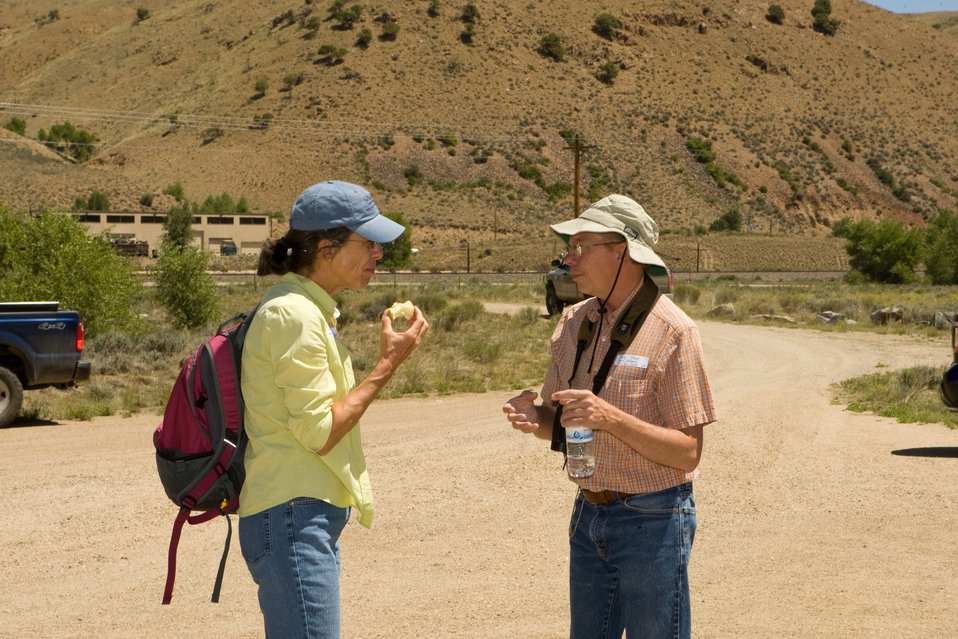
Colorado Rare Plant Conservation Initiative

The Colorado Rare Plant Conservation Initiative (RPCI) is a partnership of 23 statewide and regional agencies, private organizations, and academic institutions working to conserve 121 rare plants in Colorado. As part of these efforts the group developed the Colorado Rare Plant Conservation Strategy, developed Best Management Practices to reduce energy development impacts, addressed climate change, and developed focused strategies for the conservation of individual species at eight priority landscapes. The group has also worked to coordinate volunteer efforts for plant conservation across the state.